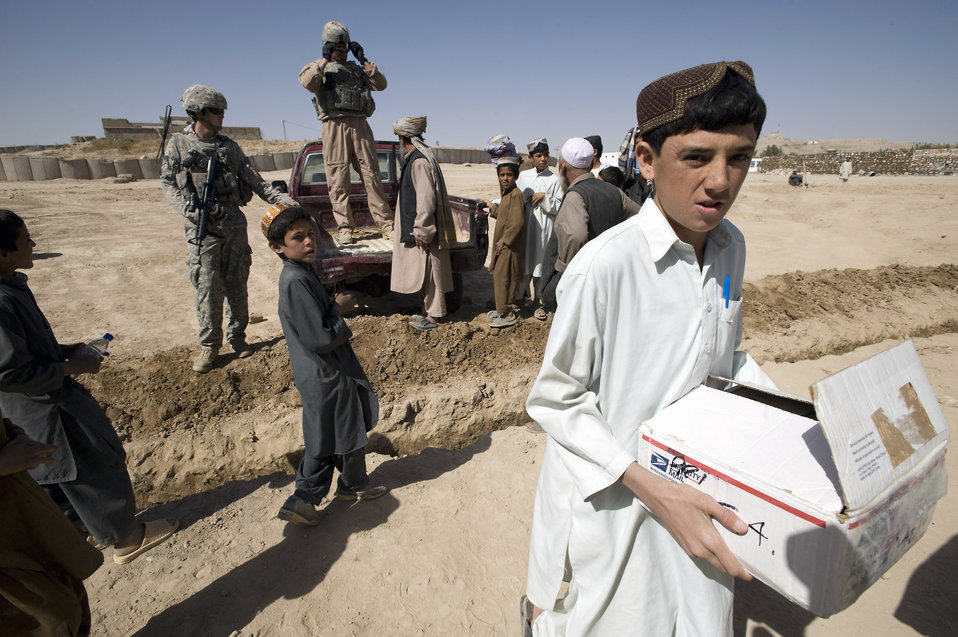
School supplies light up Afghan student's eyes

An Afghan child carries a box of school supplies delivered to his school by the Zabul Provincial Reconstruction Team on behalf of the Westfield Community School in Algonquin, Ill. The donated school supplies ranged from pens and crayons to notebooks and glue.